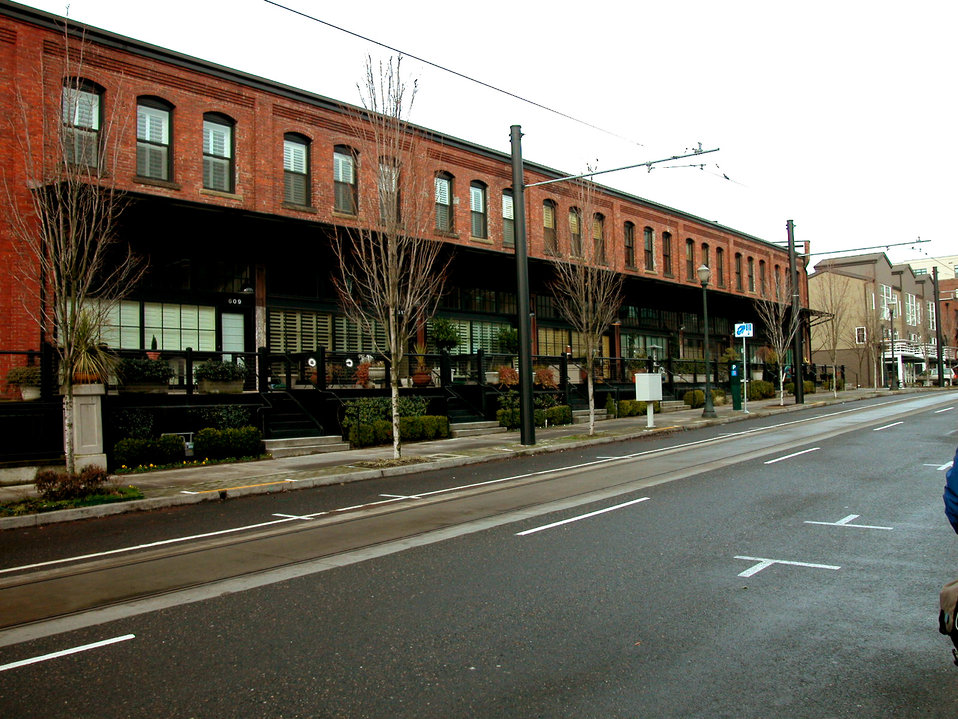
The partially raised sidewalk in this 2004 image, revealed how this configuration allowed for a grade separation, while providing the opportunity for an accessible route from either end, to the at-grade, sheltered entrances leading to each residential unit. Taking into account those individuals who are mobility-challenged during the design process, produced a product that provided a greater degree of accessibility for all who might visit this site. See PHIL# 9106 for a closer view of the building fa�e highlighting the architectural features, which facilitate accessibility.